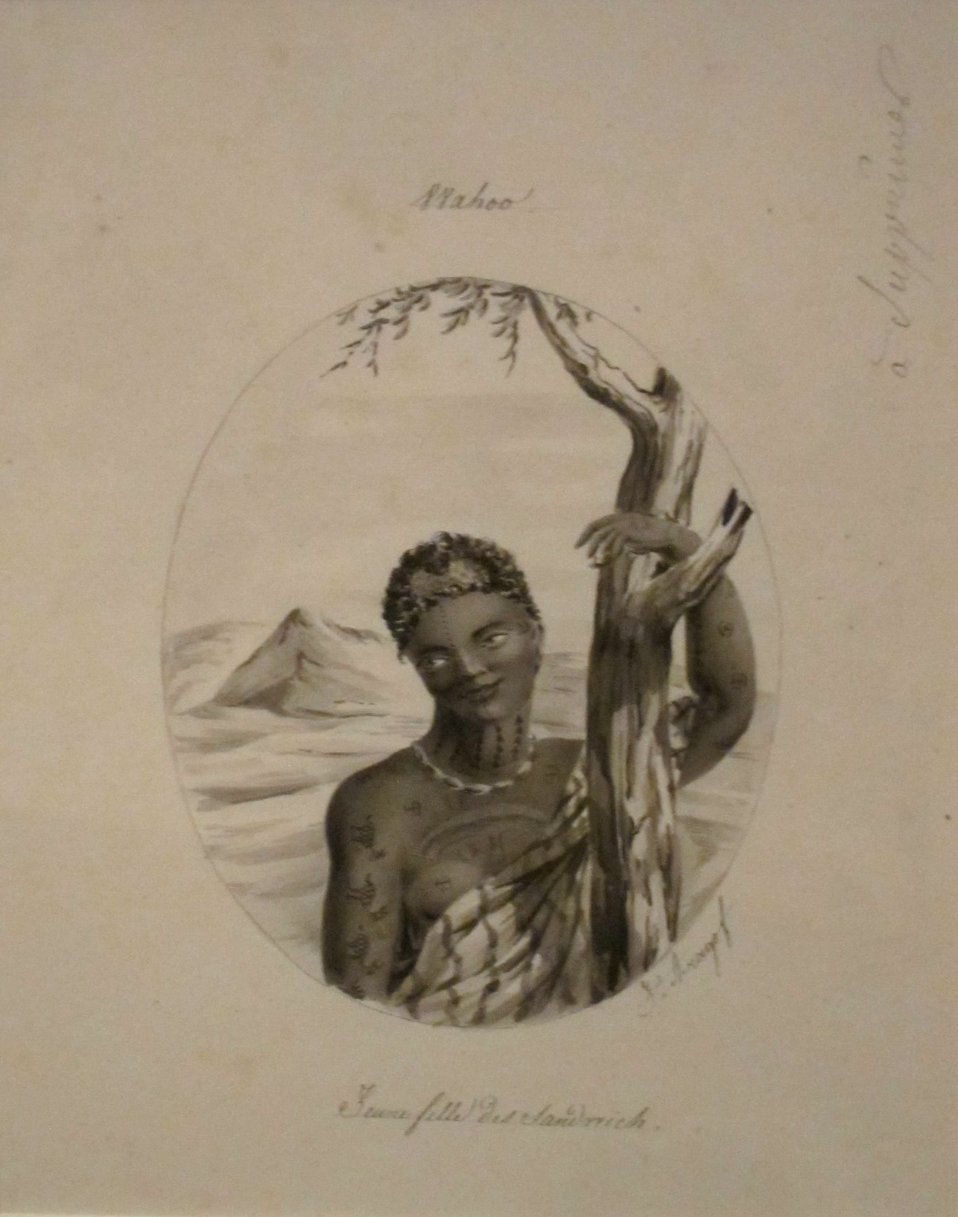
'O'ahu, a Young Woman of the Sandwich Islands' by Jacques Arago, Honolulu Museum of Art